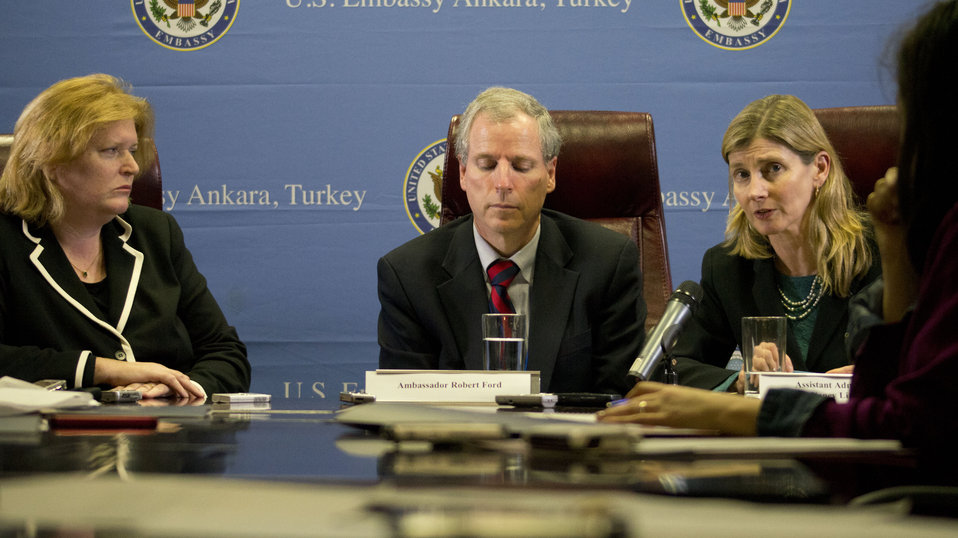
Assistant Secretary Richard, Ambassador Ford, and USAID Deputy Administrator Lindborg Participate in a Roundtable

Assistant Secretary of State for Population, Refugees, and Migration Anne C. Richard, left; U.S. Ambassador to Syria Robert Ford, center; and USAID Assistant Administrator for Democracy, Conflict, and Humanitarian Assistance Nancy Lindborg, right; participate in a roundtable in Ankara, Turkey, on January 25, 2013.